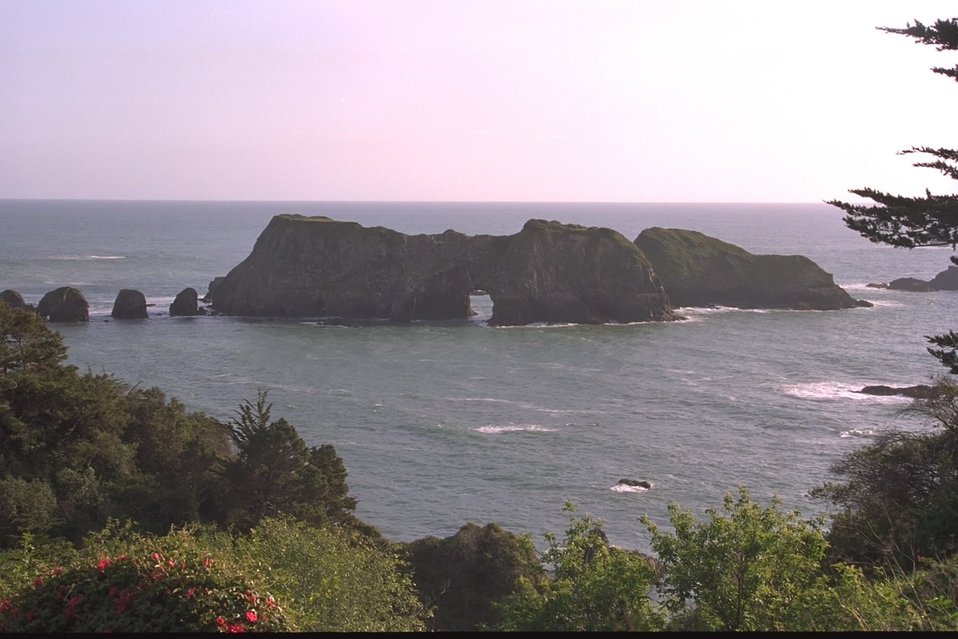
California coastal national monument